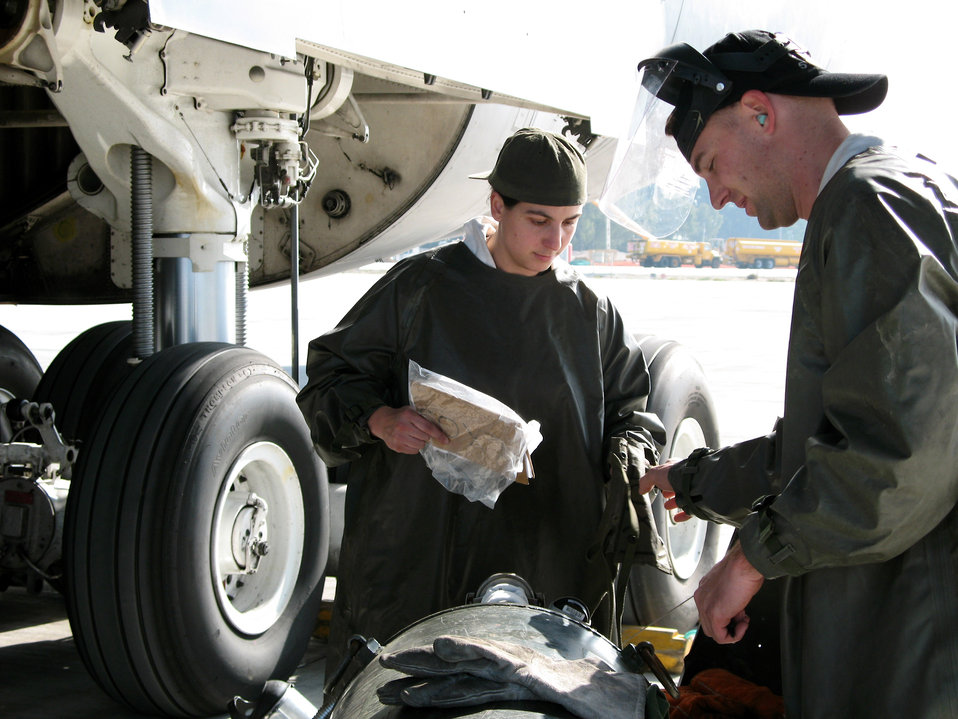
Lajes Airmen impact mission at Naval Station Rota

Senior Airman Stephanie Tepidino, left, and Staff Sgt. Ryan Greene prepare to put liquid-oxygen on a C-5 Galaxy Feb. 9 at Naval station Rota, Spain. Airman Tepidino is assigned to the 729th Air Mobility Squadron at Lajes Field, Azores, but is serving temporary duty at Rota where she receives important training from Sergeant Greene.